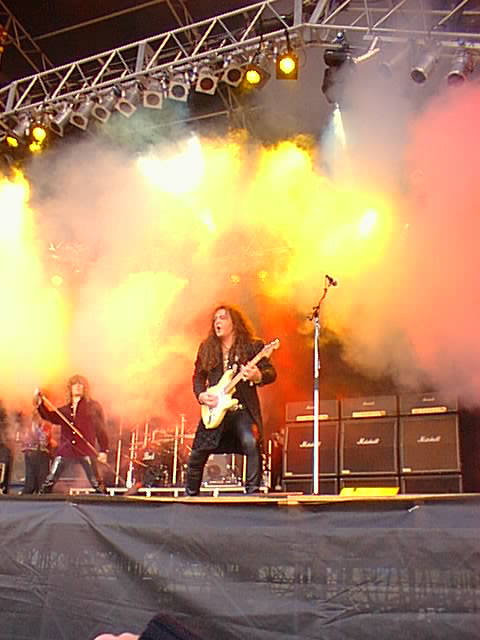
Yngwie live